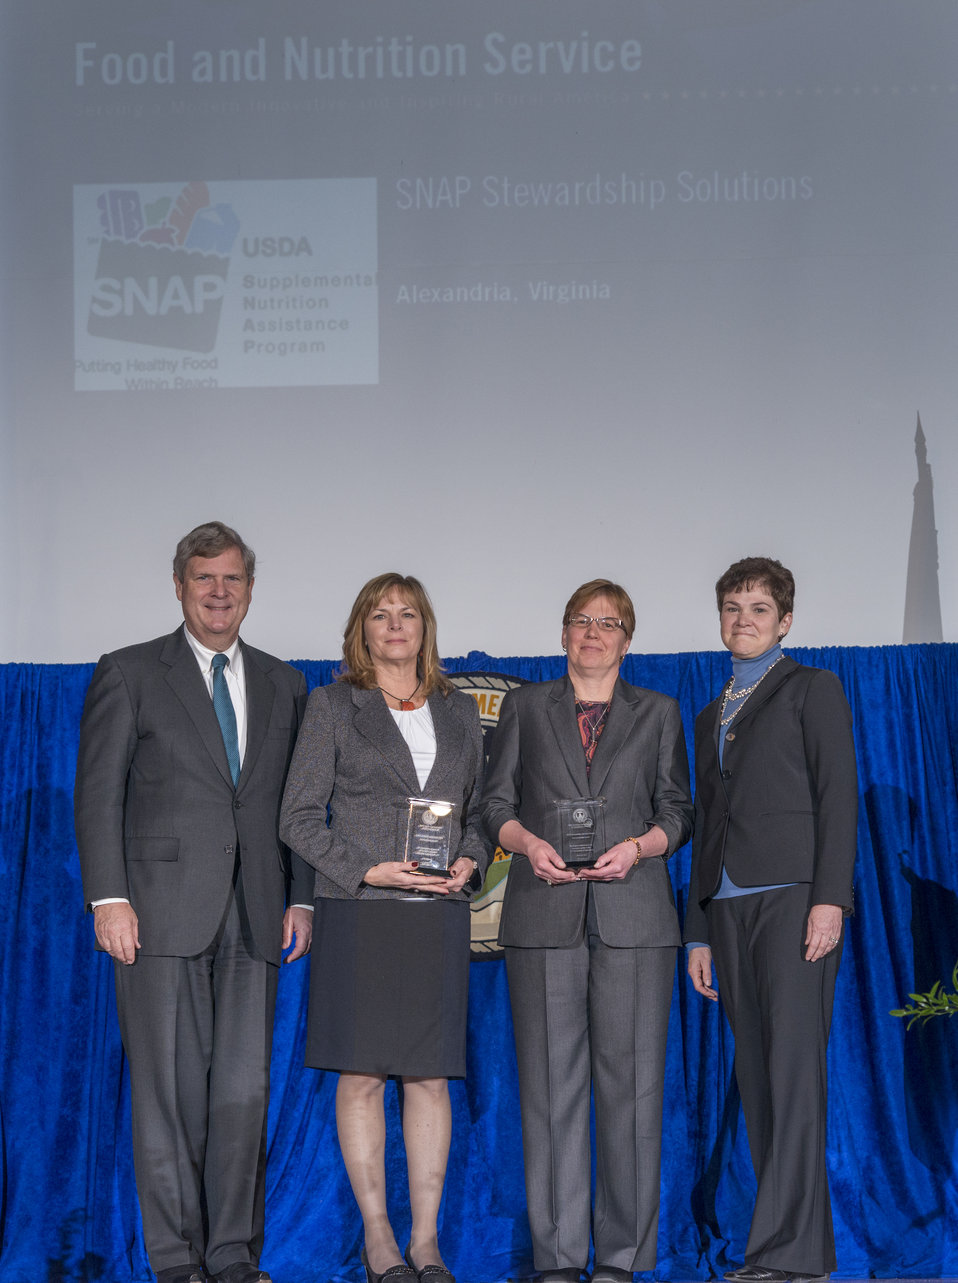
Agriculture Secretary Tom Vilsack and Agriculture Deputy Secretary Krysta Harden present the Secretary’s Honor Award to Supplemental Nutrition Assistance Program (SNAP) Stewardship Solutions Project, Food and Nutrition Service from Alexandria, VA Group leaders Andrea Gold and Ronald Ward (accepting Neva Terry) for implementing the SNAP Stewardship Solutions Project to strengthen program integrity and protect the American taxpayer's investment in the nation's critical nutrition assistance safety net at the 2013 Honor Awards in the Jefferson Auditorium at the U.S. Department of Agriculture (USDA) in Washington, D.C. on Wednesday, Dec. 11, 2013.